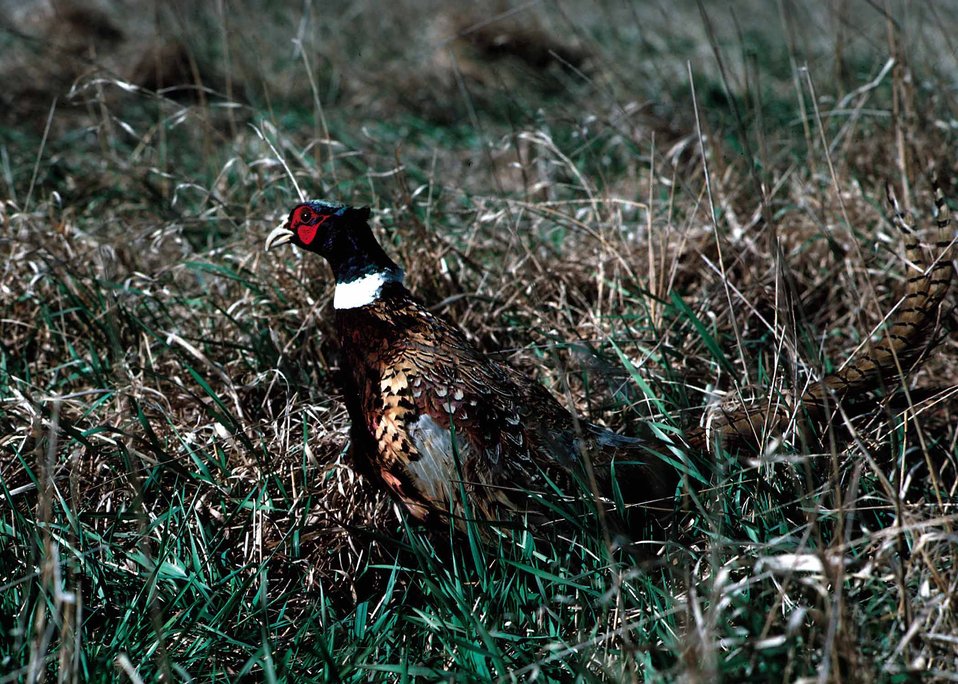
Ringtail pheasant in grass in Iowa.